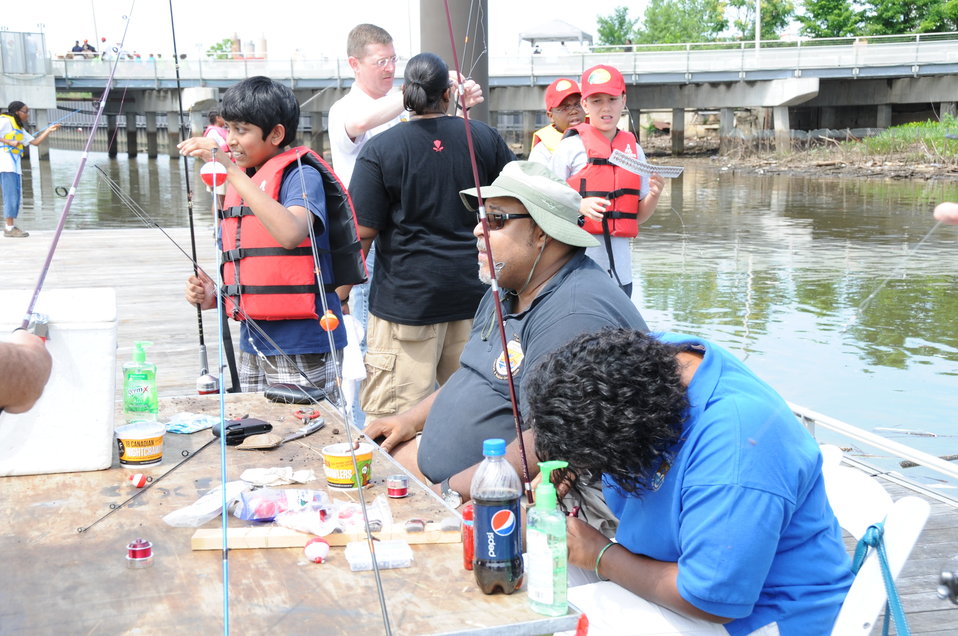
2013 National Fishing and Boating Week

Local students prepare to enjoy fishing at the annual kick-off of National Fishing and Boating Week on the Anacostia River in Washington D.C.